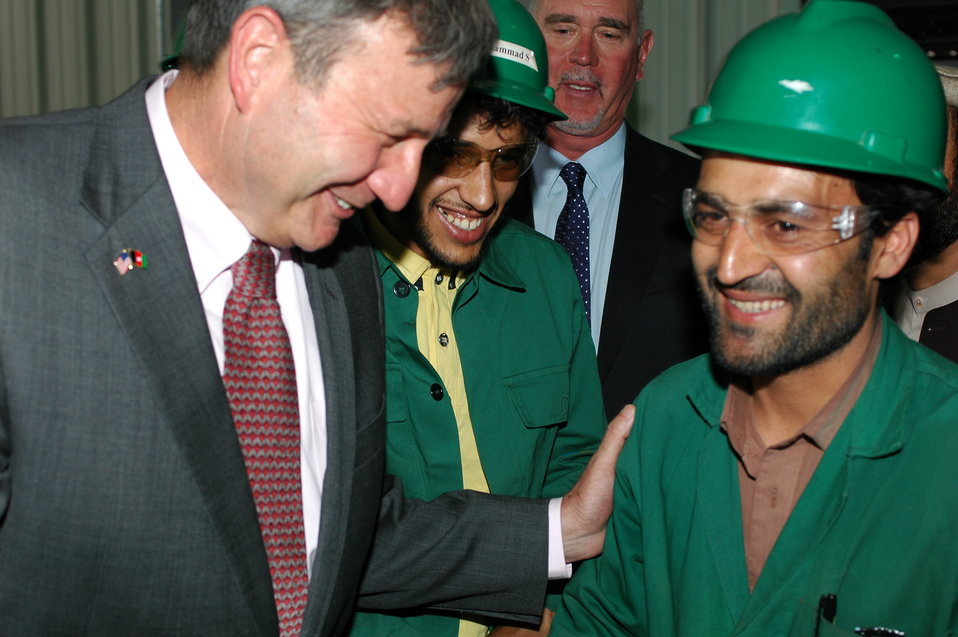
105 MW Tarakhil Power Plant Handover